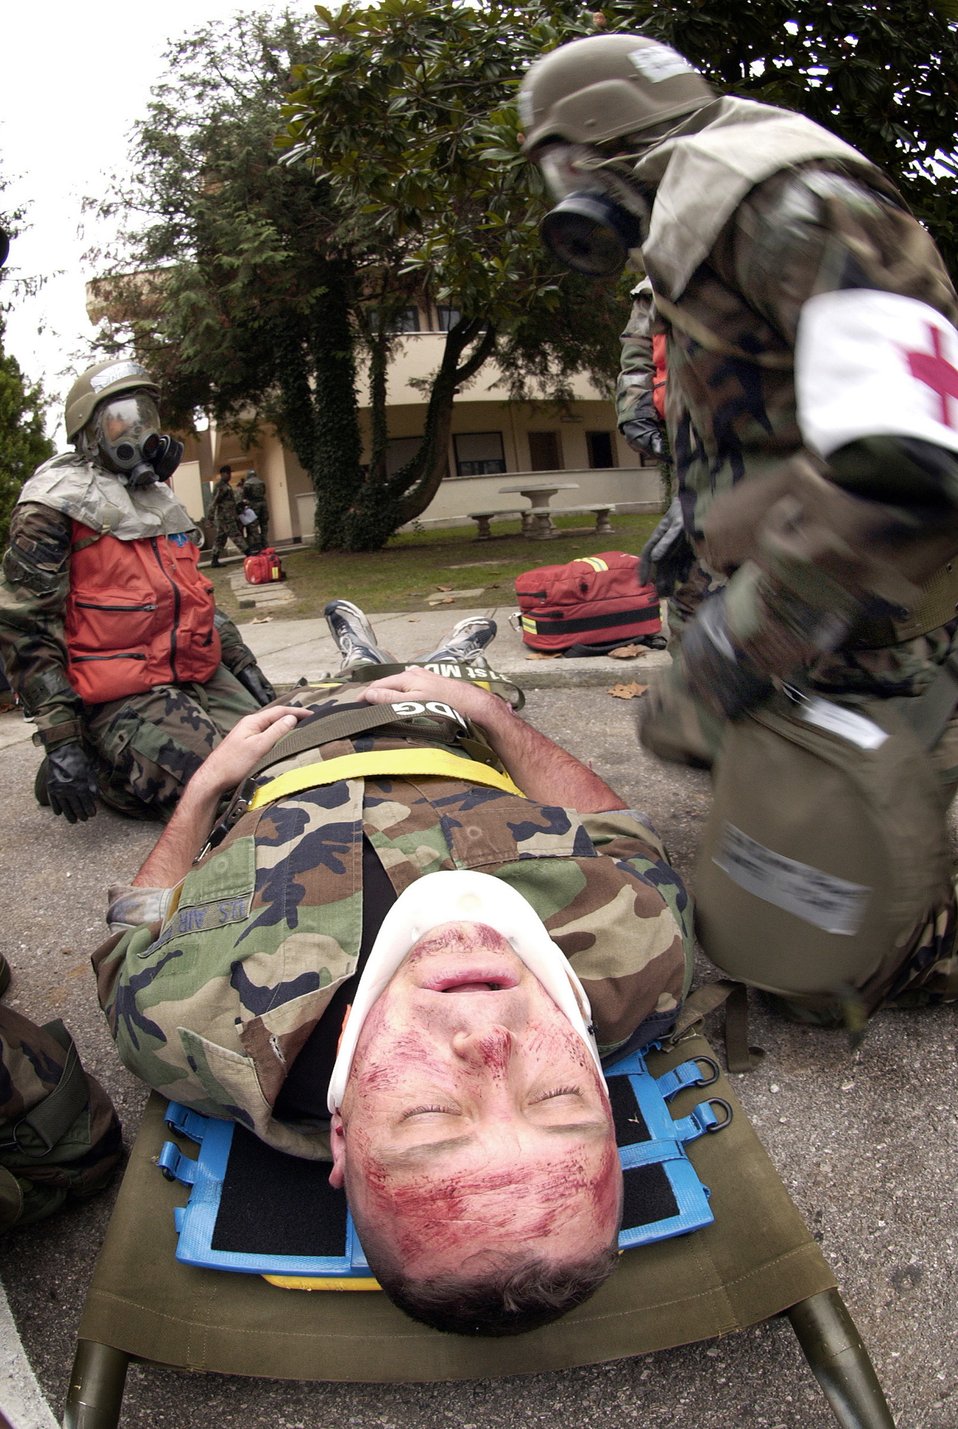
Accident response exercise

AVIANO AIR BASE, Italy (AFPN) -- Airmen with 31st Medical Group prepare to transport Capt. Mark McElroy to the medical clinic after a simulated chemical attack during a major accident response exercise. The group held the exercise to test it's ability to handle mass casualties and chemical exposure victims.